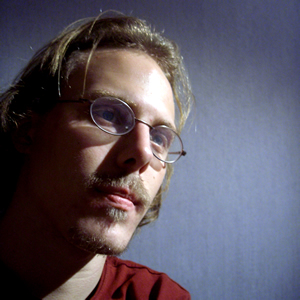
Beskrivning: Avbildning av Daniel Blomqvist mot grå bakgrund. Bilden är tagen av Daniel själv.